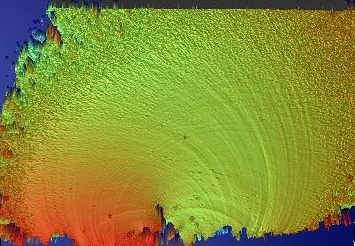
New Guide Available for Fractography of Ceramics and Glasses

Optical profilometer image of the broken surface of a glass rod shows height of peaks (yellows and reds) and valleys (blues and purples) of the fracture surface in millionths of a meter. Curved ribs reveal the path of the stress waves through the glass. Image shows an area 1 x 1.3 millimeters.